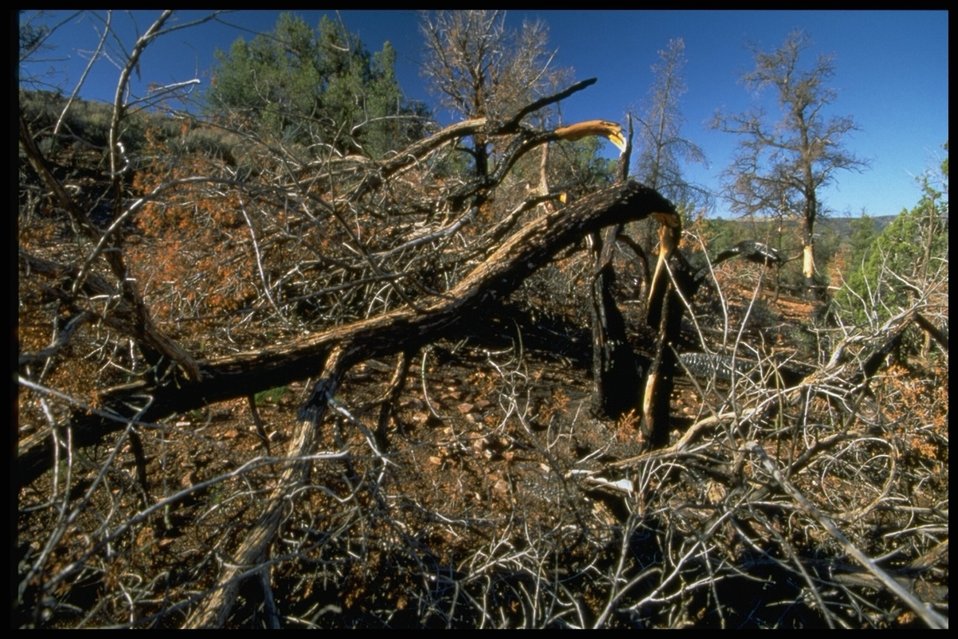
A dead, fallen tree slowly dies up in the Parshant National Monument area.